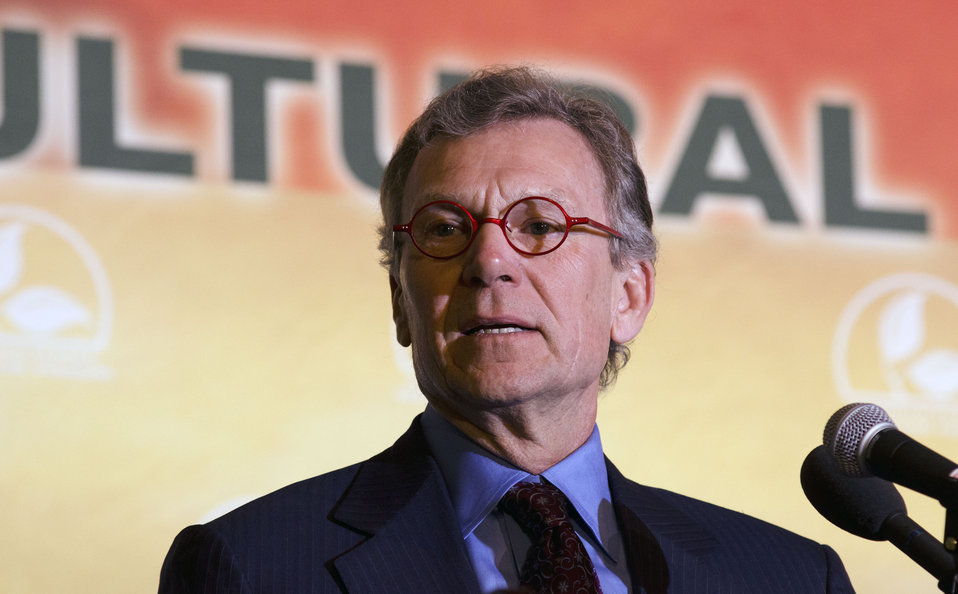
Former U.S. Senator from South Dakota Thomas A Daschle and Senior Policy Advisor, DLA Piper speaking on Plowing Ahead: Farming, Food Security, and the Future as the Distinguished Guest Speaker at the Opening session of the 2013 Agriculture Outlook Forum, in Arlington, VA, on Thursday, February 21, 2013.